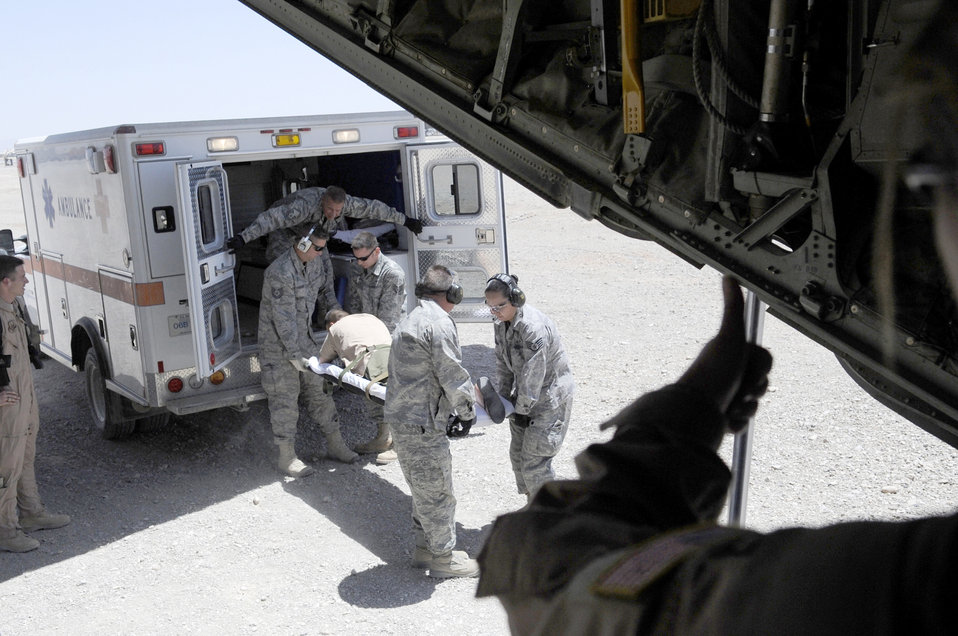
Aeromedical evacuation missions

Members of the 451st Expeditionary Aeromedical Evacuation Squadron load a litter patient onto a C-130J Hercules June 9 at Camp Bastion, Afghanistan, during a bandage mission. Bandage missions require the team to travel to different bases throughout Afghanistan, pick up patients and transport them to receive a higher level of care.